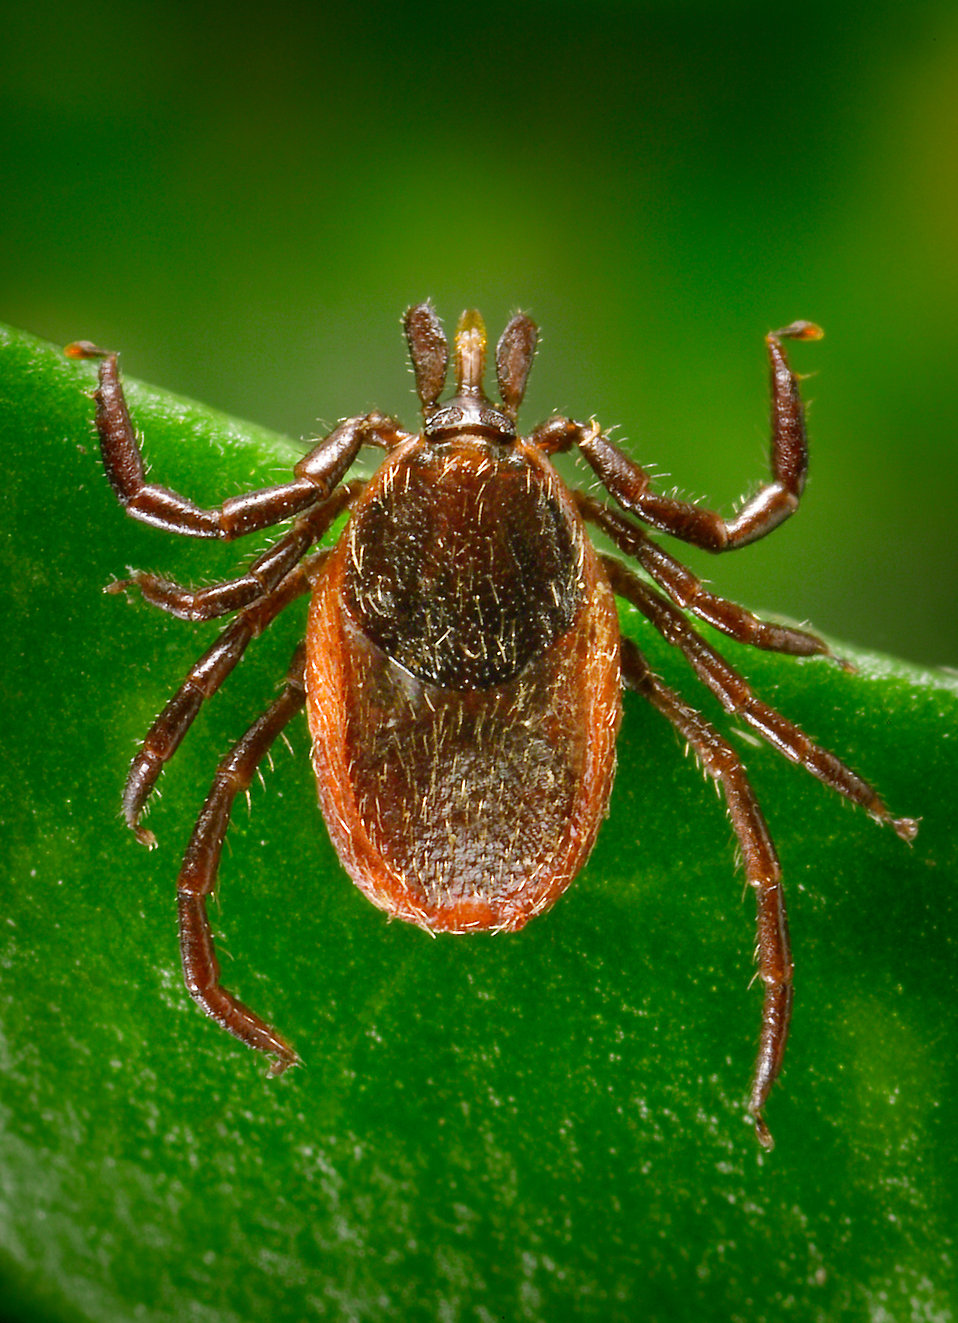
This photograph depicted a dorsal view of an adult female western blacklegged tick, Ixodes pacificus, which has been shown to transmit Borrelia burgdorferi, the agent of Lyme disease, and Anaplasma phagocytophilum, the agent of 'human granulocytic anaplasmosis' (HGA), which was previously known as 'human granulocytic ehrlichiosis' (HGE), in the western United States. The small scutum, or tough, chitinous dorsal abdominal plate, does not cover its entire abdomen, thereby allowing the abdomen to expand many times when this tick ingests its blood meal, and which identified this specimen as a female. The four pairs of jointed legs, places these ticks in the Phylum Arthropoda, and the Class Arachnida.